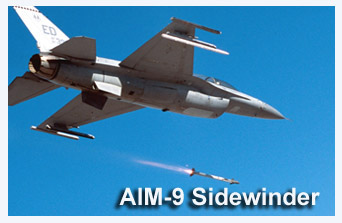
AIM-9 Sidewinder

A pilot from the 416th Flight Test Squadron successfully fires the newest variant of the AIM-9 Sidewinder for the first time from an F-16 Fighting Falcon on April 9, 2004.